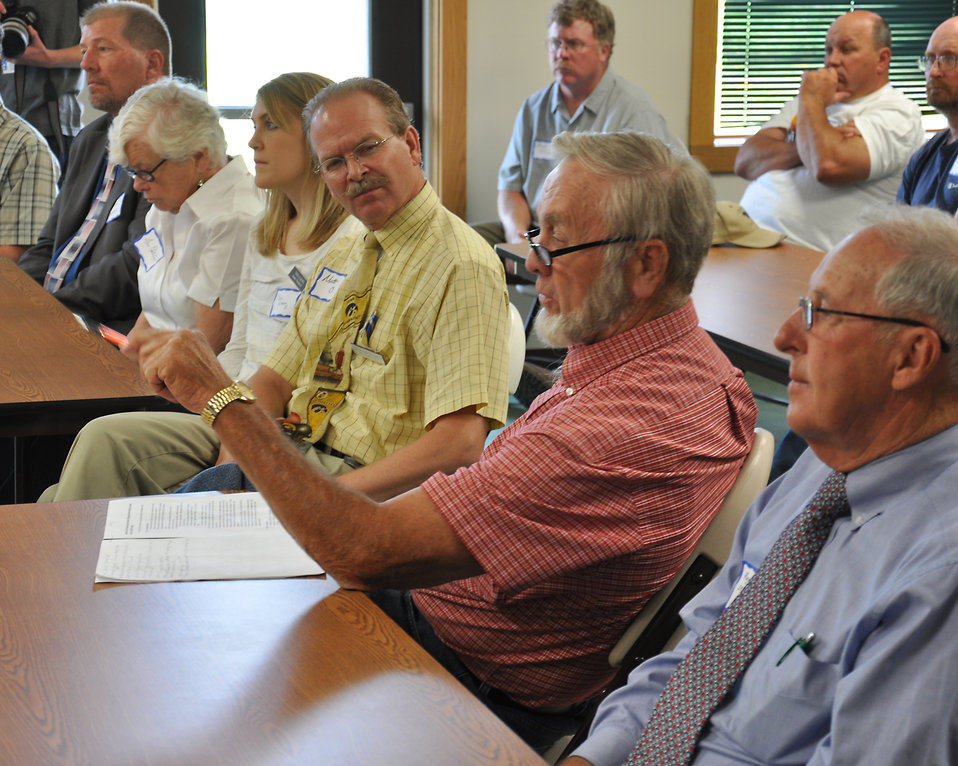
A member of the audience asks Agriculture Secretary Tom Vilsack and Congressman Bruce Braley a question during a listening session in Maquoketa and Cedar Rapids, Iowa, on Monday, June 11, 2012. They discussed the upcoming Food, Farm and Jobs Bill and highlighted how agriculture is helping create jobs and grow the economy.